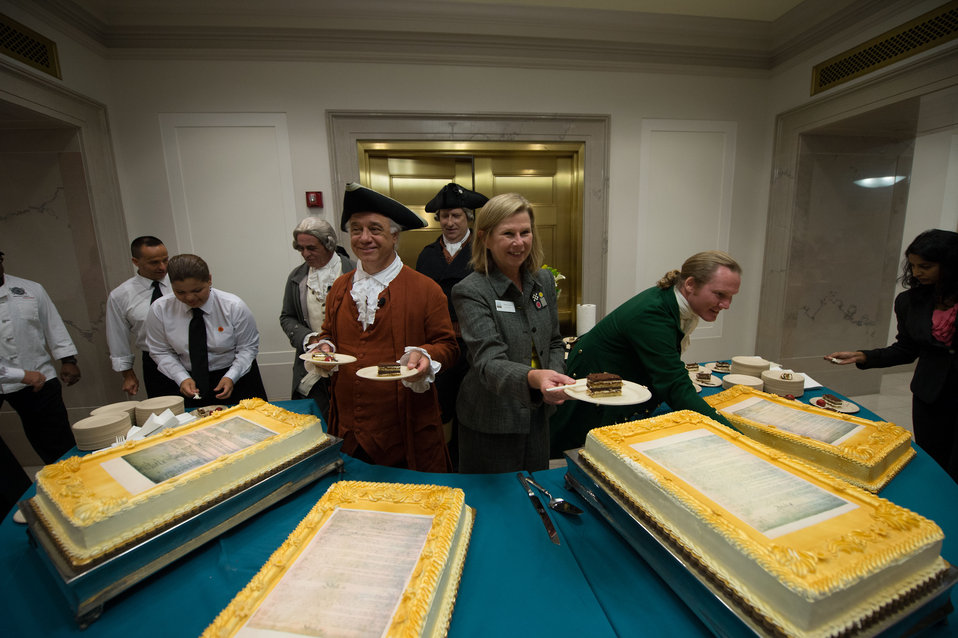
Serving the cake

The Founding Fathers and Thora Colot, director of the Foundation for the National Archives, slice and serve cake!